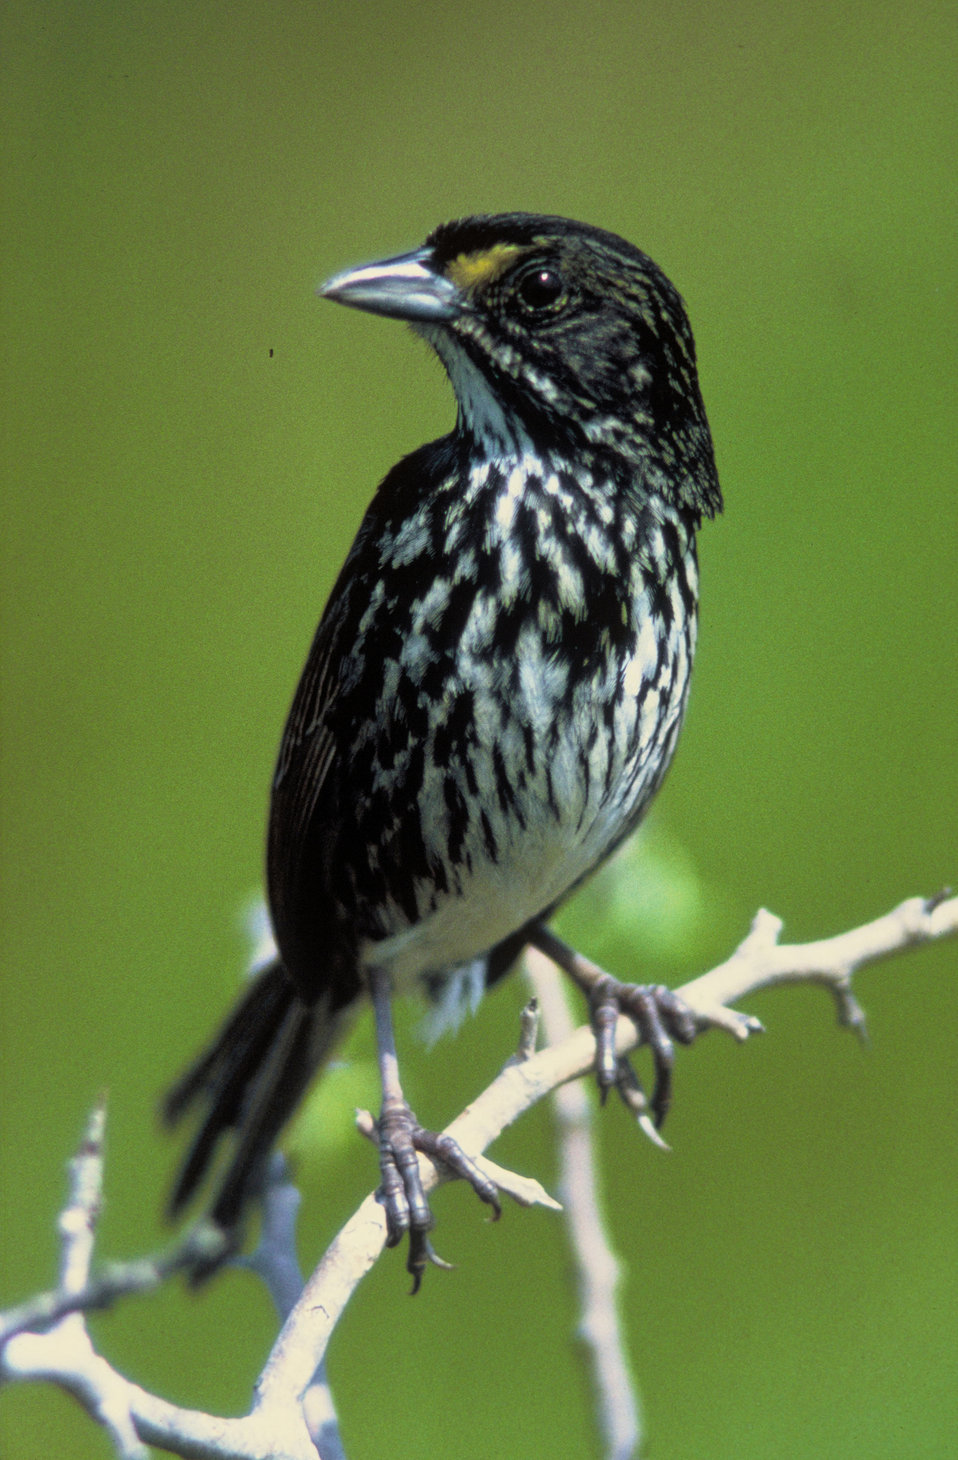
Dusky Seaside Sparrow.